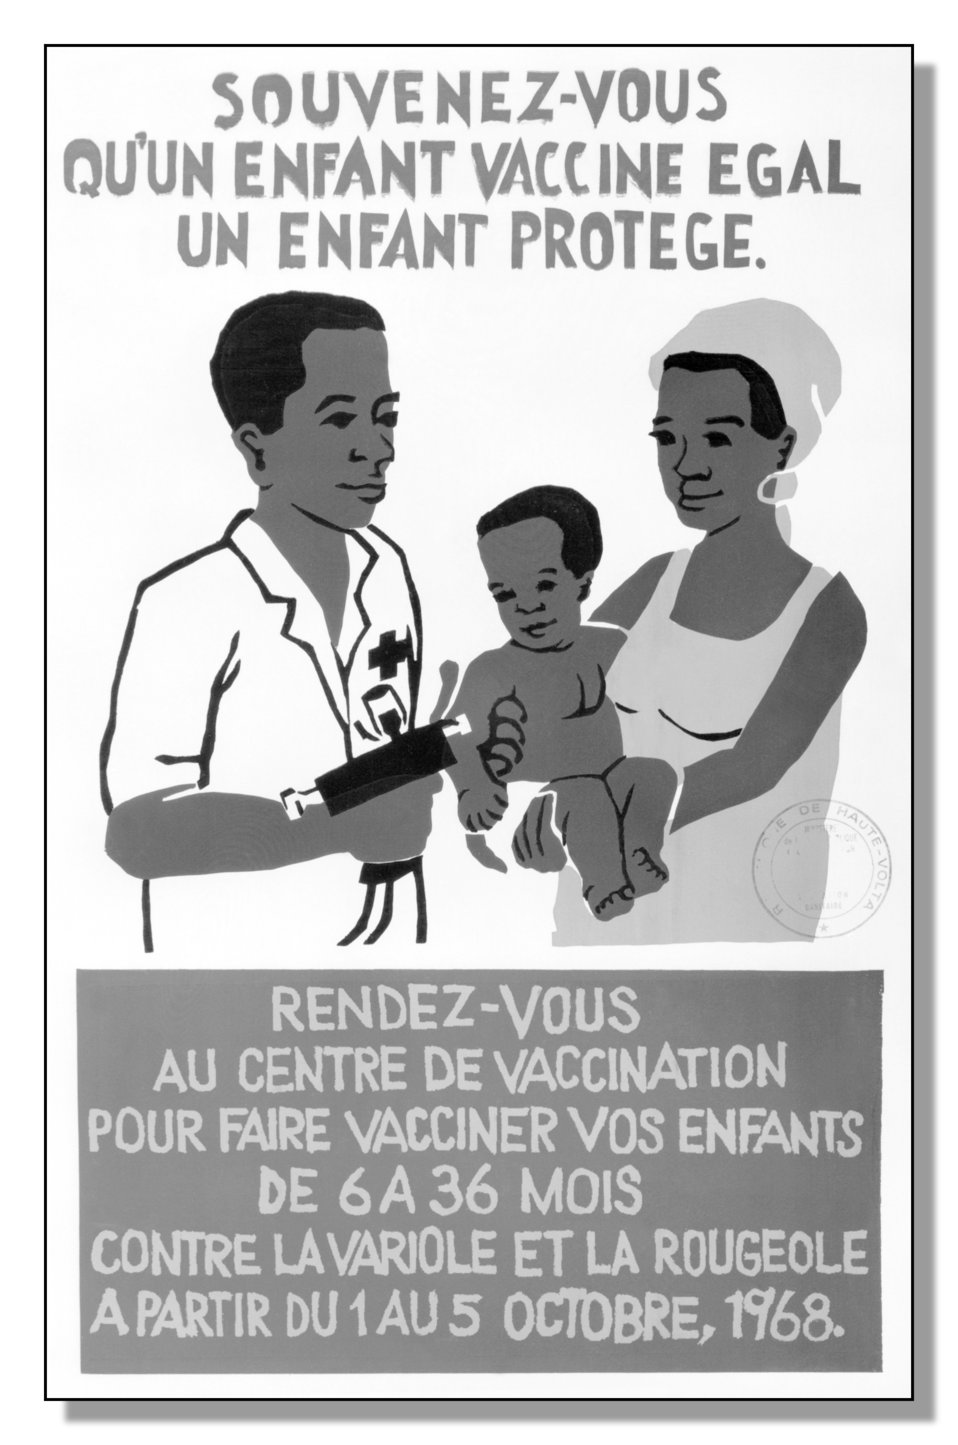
This poster was created prior to 1979 promoting the importance of Smallpox and Measles vaccination in foreign lands.